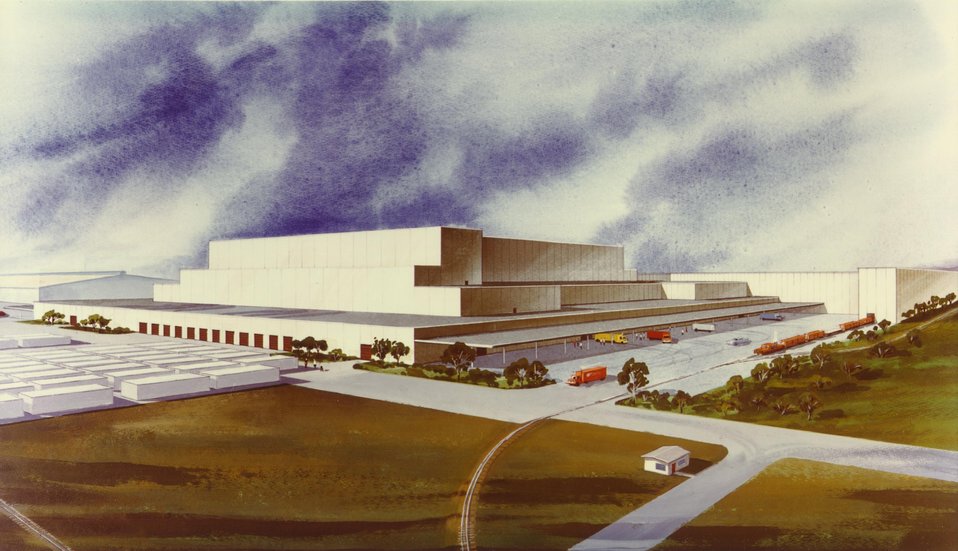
ARTIST'S CONCEPT OF THE RECYCLE/ASSEMBLY (RA) BLDG. OF THE PORTSMOUTH, OHIO, GAS CENTRIFUGE URANIUM ENRICHMENT PLANT.

THE RA BUILDING WILL BE USED FOR ASSEMBLING AND TESTING THE OPERATION OF CENTRIFUGE MACHINES BEFORE THEY ARE INCORPORATED INTO THE MAIN PROCESS BUILDINGS. THE RA BUILDING WILL ALSO BE USED THROUGHOUT THE LIFE OF THE PLANT TO REPAIR AND MAINTAIN THE CENTRIFUGES.